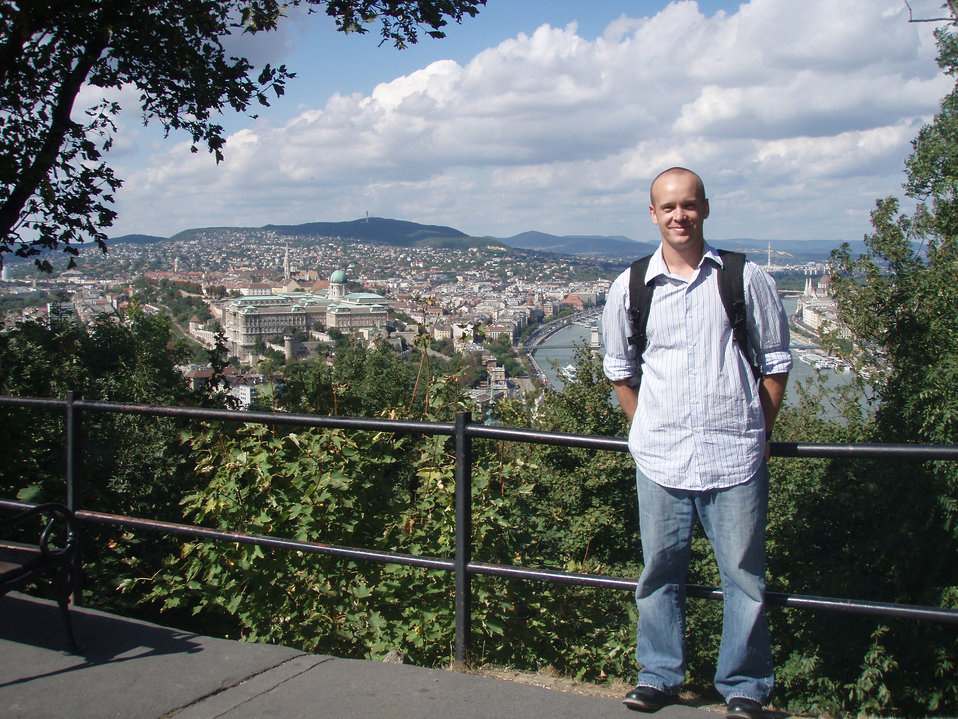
1st Lt. Alejandro Bihar explains language and cultural program

1st Lt. Alejandro Bihar stands on top of the Citadel overlooking Budapest and the Danube River in Hungary. Bihar is a member of the Language Enabled Airman Program, or LEAP, and spent time in Hungary as part of the language-intensive training event.